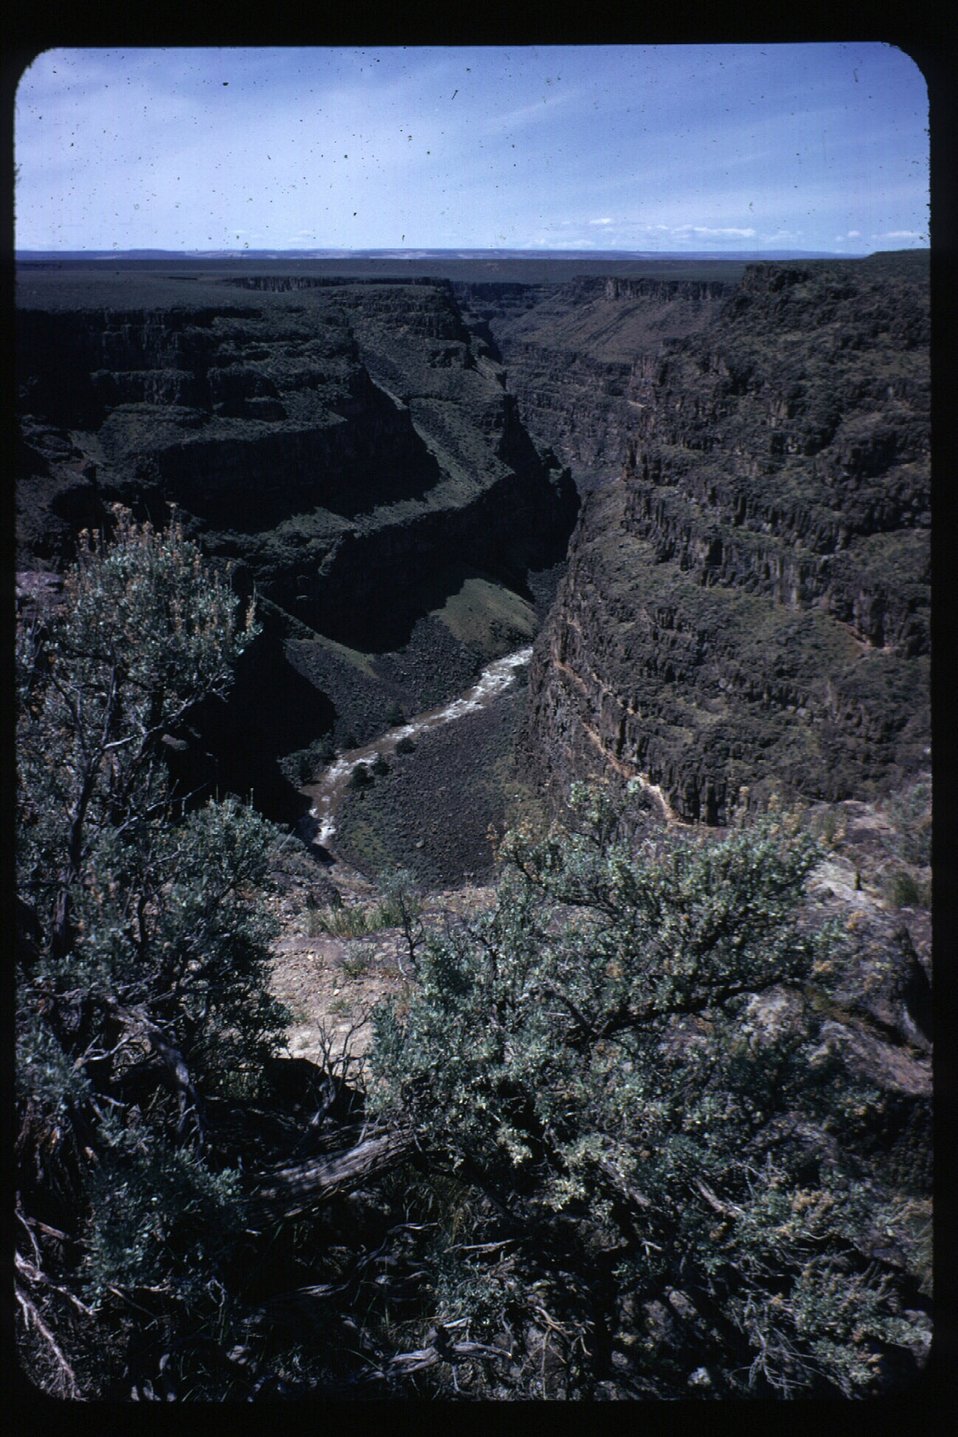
Scenic Bruneau River Overlook Owyhee Field Office LSRD Lower Snake River District